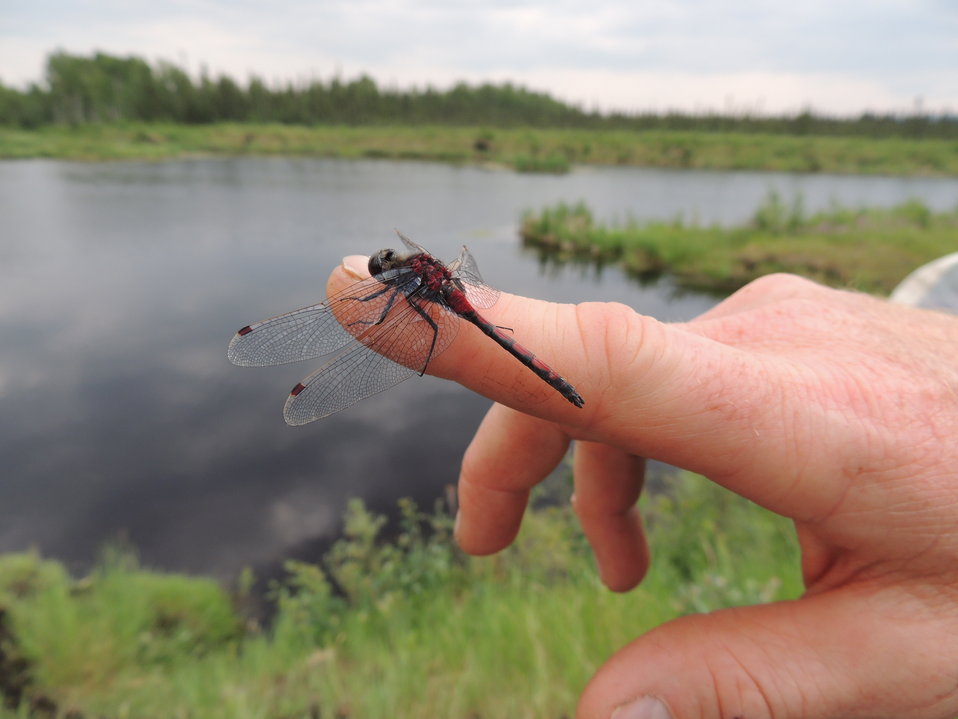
Belted Whiteface

(USFWS)